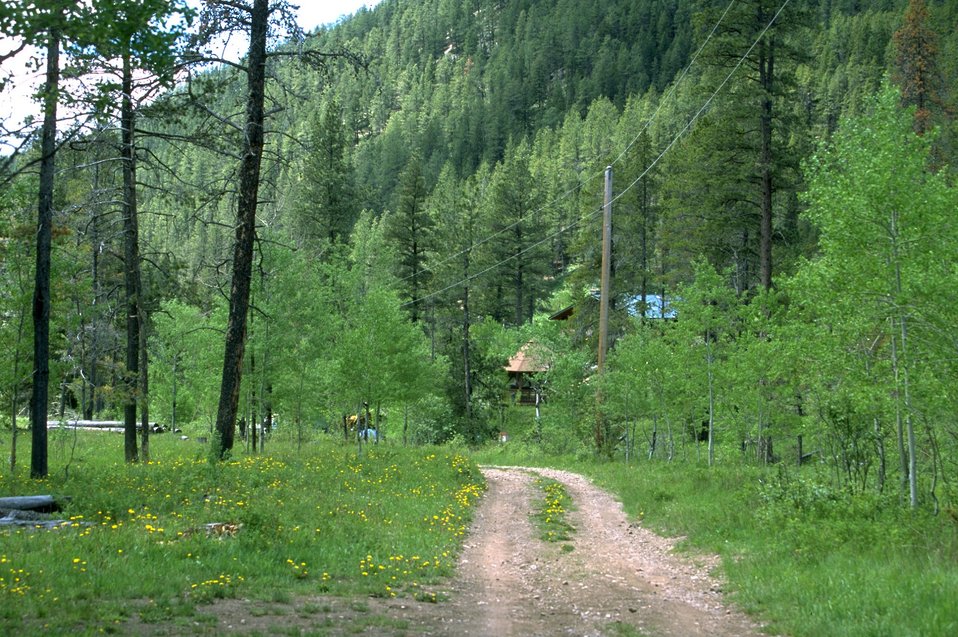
Scenic view in LimeKiln Canyon